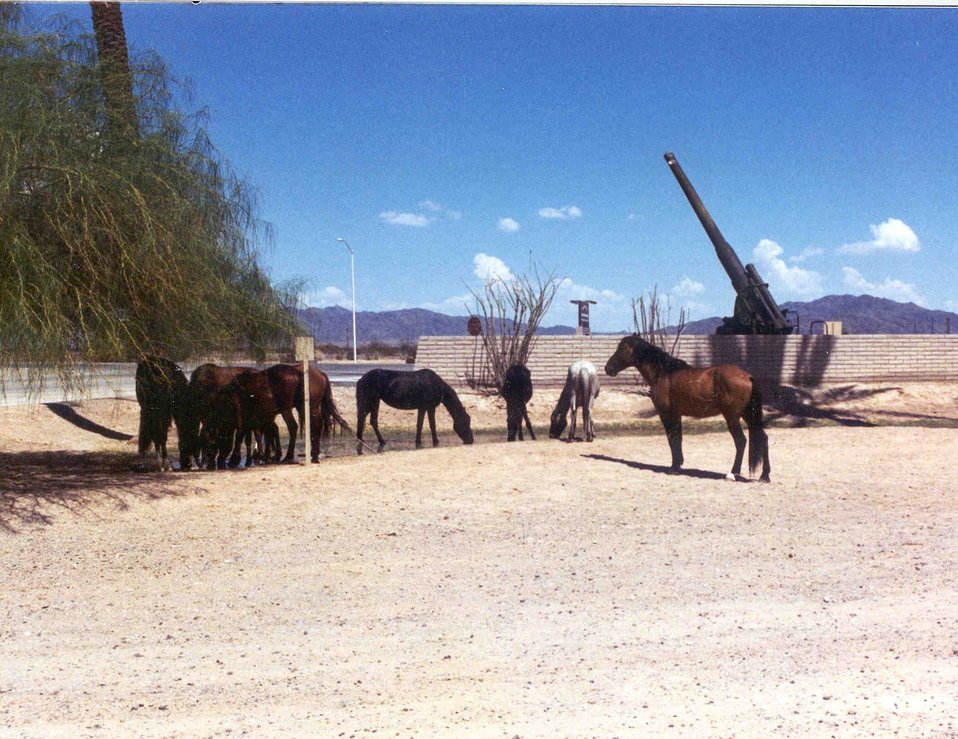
Wild horses stop for a drink at Yuma Proving Ground